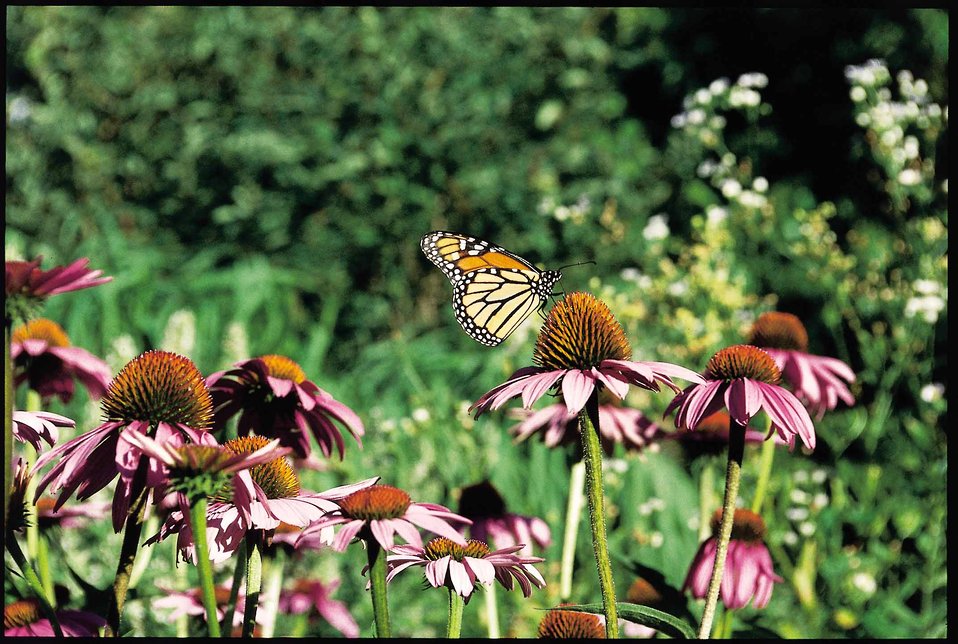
Monarch butterfly on purple prairie coneflower in a back yard in Des Moines, Iowa.